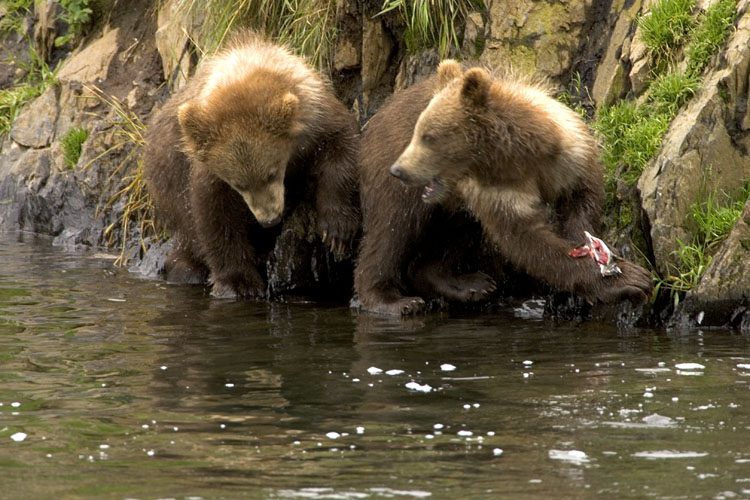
Kodiak Brown Bears

Kodiak National Wildlife Refuge- Wildlife